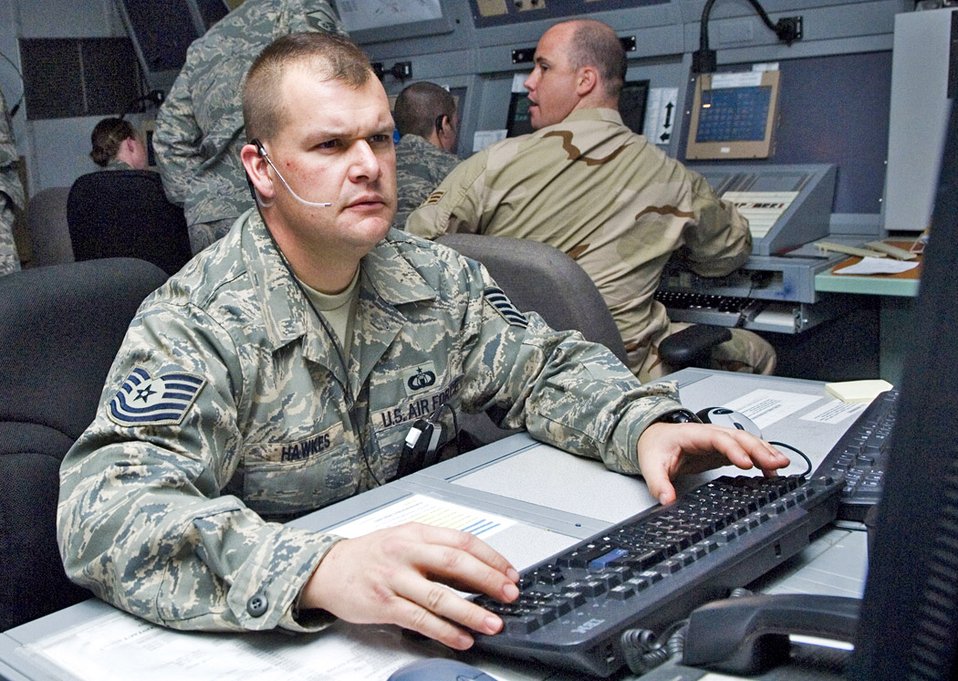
Balad radar air traffic controllers run skies of Iraq

Tech. Sgt. Aaron Hawkes reads a new notice to Airmen at the combined en route radar approach control facility Balad Air Base, Iraq. Sergeant Hawkes is the 332nd Expeditionary Operations Support Squadron air traffic control watch supervisor deployed from Eglin Air Force Base, Fla.